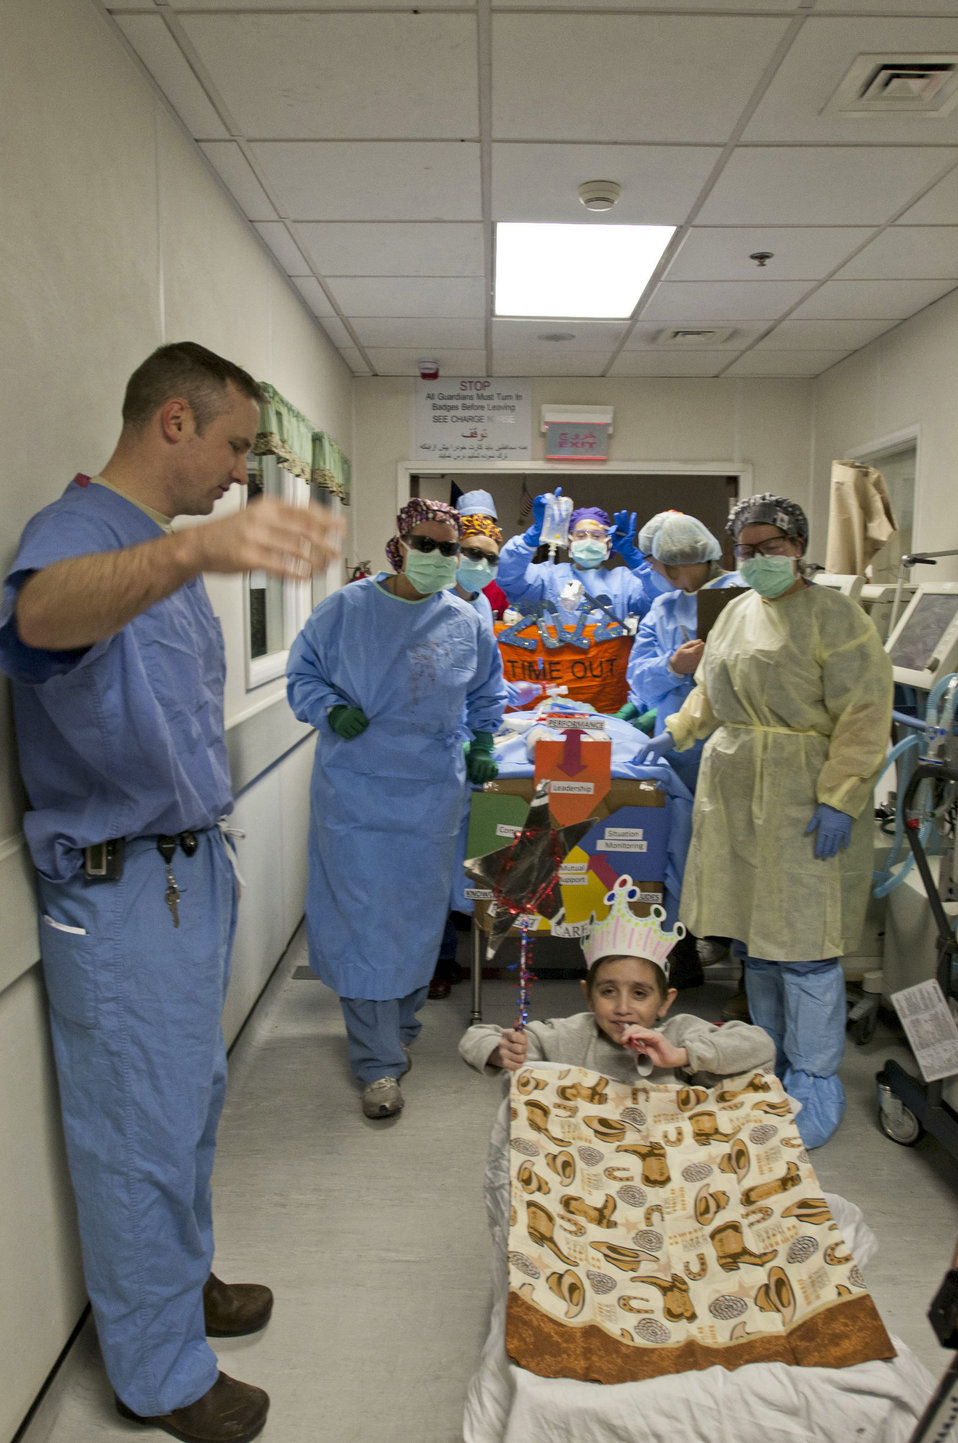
Craig Joint-Theater Hospital's longest resident inspires staff

Najibullah, 10, leads the New Year's Day parade Jan. 1, 2012, down a hallway of the Craig Joint-Theater Hospital. He was severely injured in the stomach July 20, 2011, in Ghazni province. The hospital staff conducted the parade through the hallways of the hospital, with Najibullah serving as grand marshal.